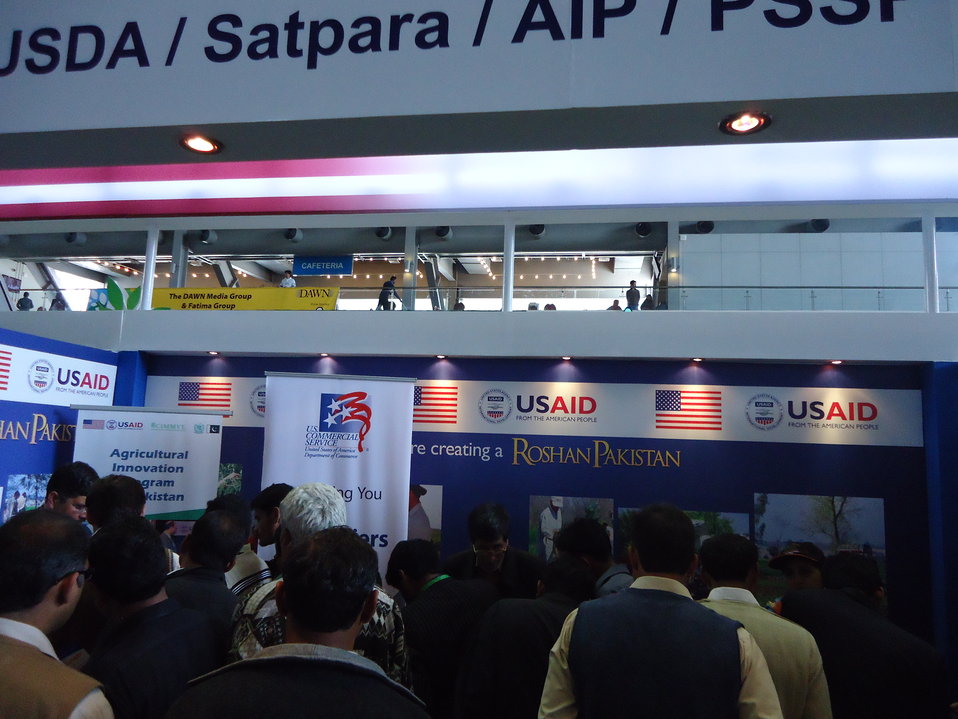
Sadpara Development Project

Gathering of General Public at SDP USAID Stall